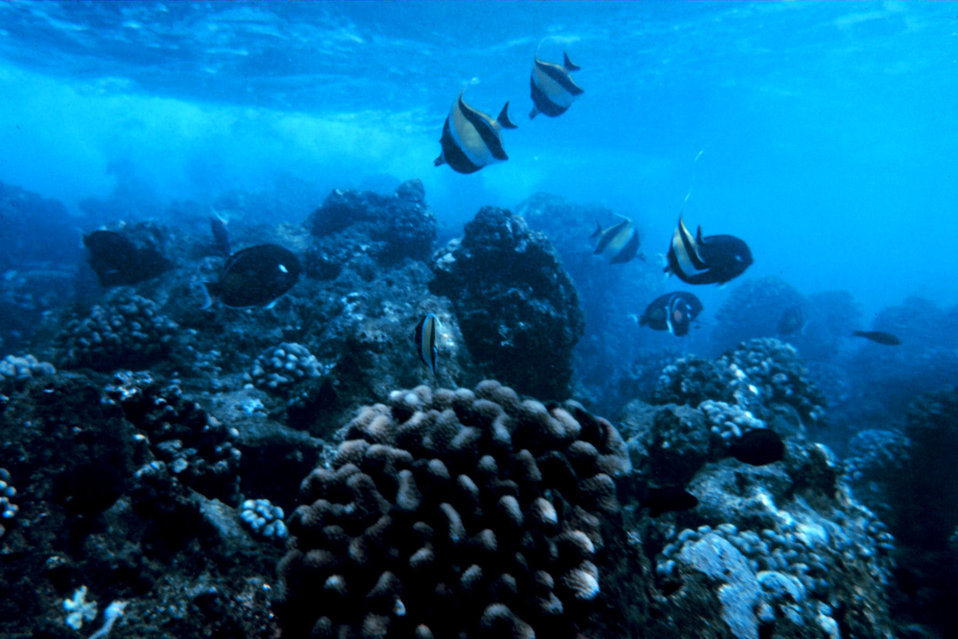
Zanclus Canescens - Moorish Idol, Acanthurus Achilles, Achilles Tang Other fish species and coral head of Porites lobatus in foreground